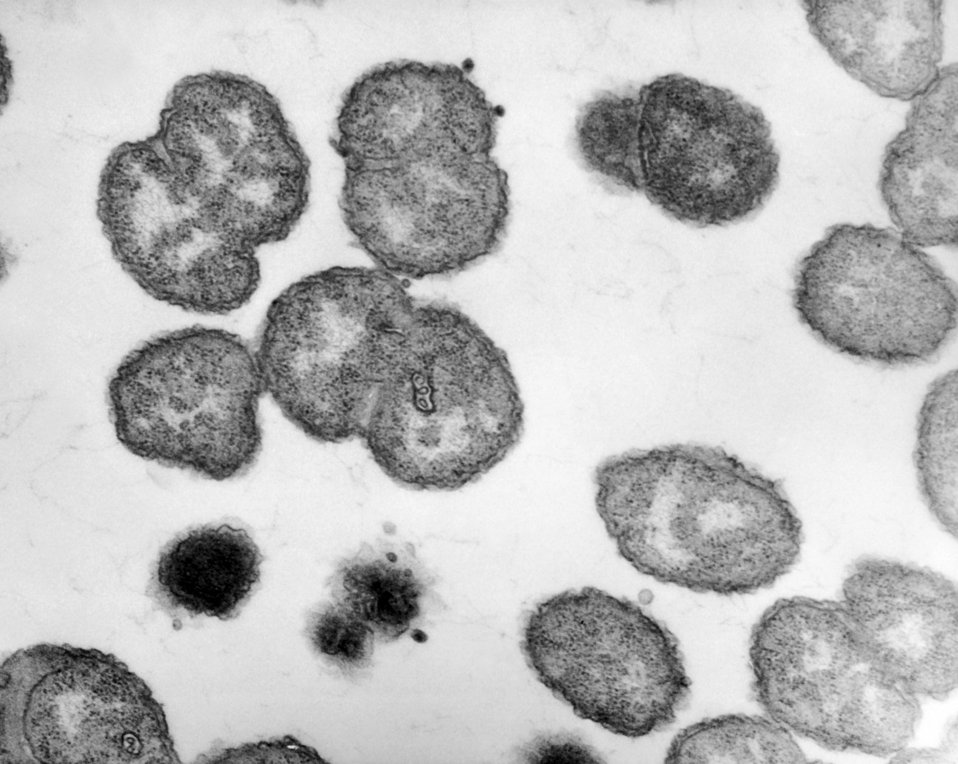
Electron micrograph of Neisseria gonorrhoeae bacteria, the causative agent of gonorrhea; magnification 100,000X.